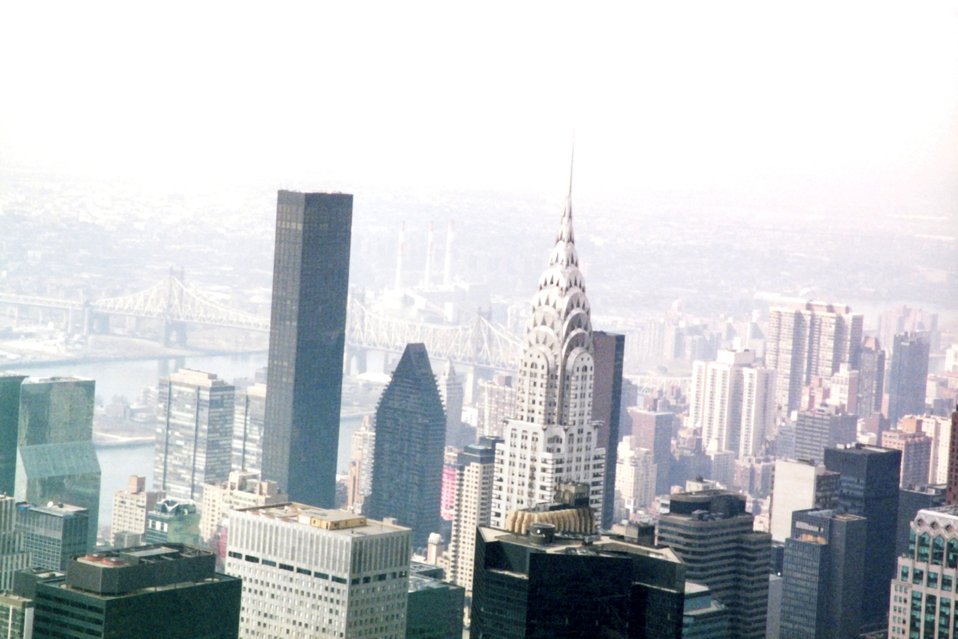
New York skyline from above.